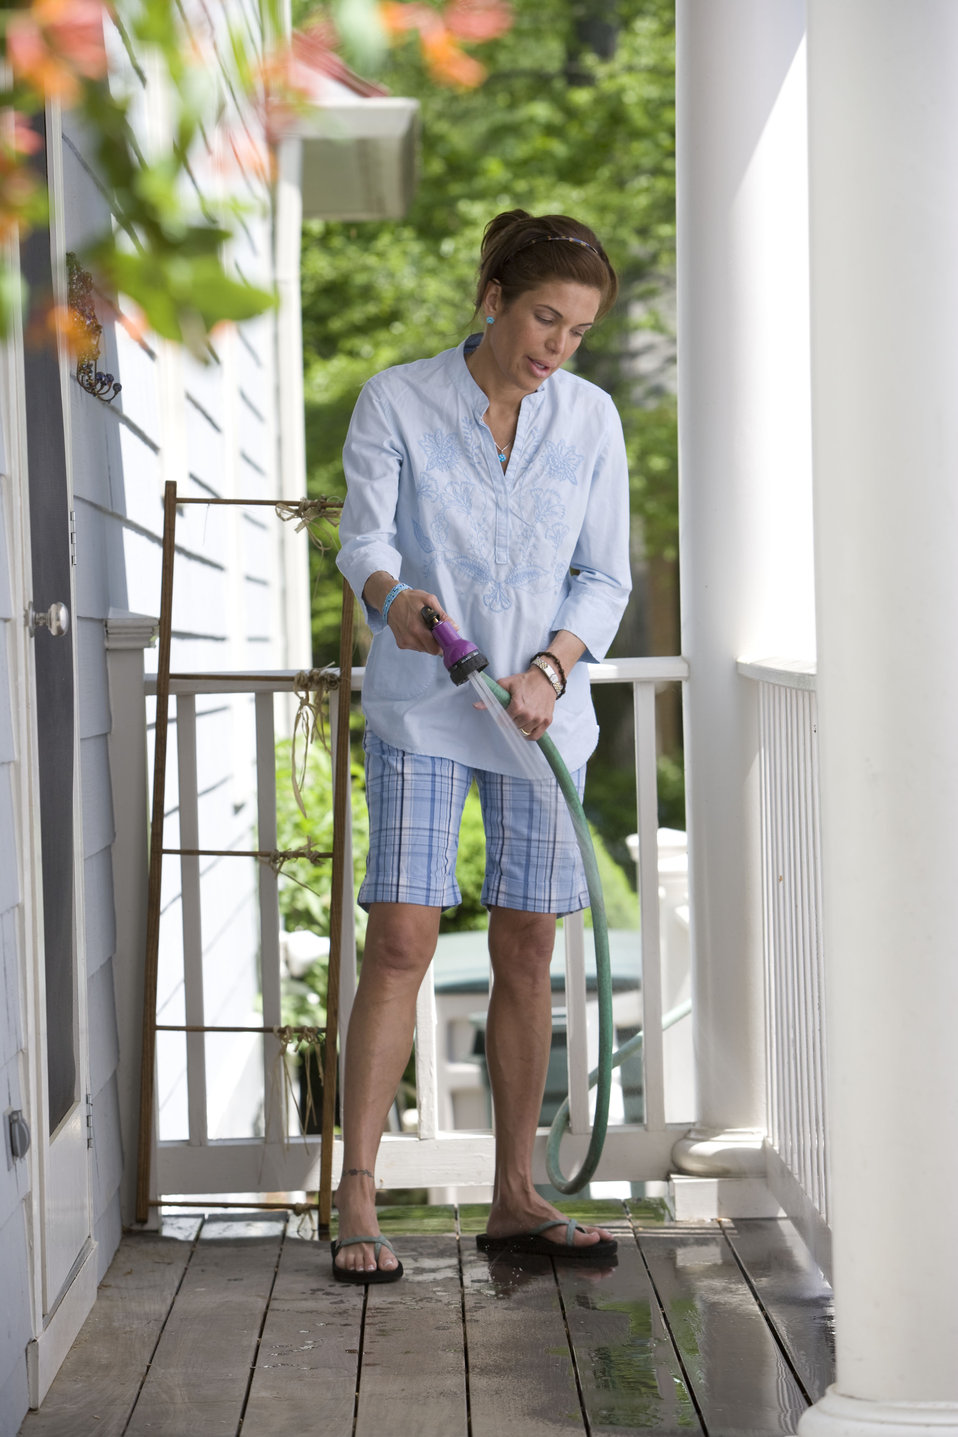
Home maintenance includes both the indoor, and as was the case here, outdoor environment, and is an ongoing process with which a homeowner need to keep up in order to provide for a healthy living space. Keeping your porch dust free reduces the amount of contaminants tracked into the house.